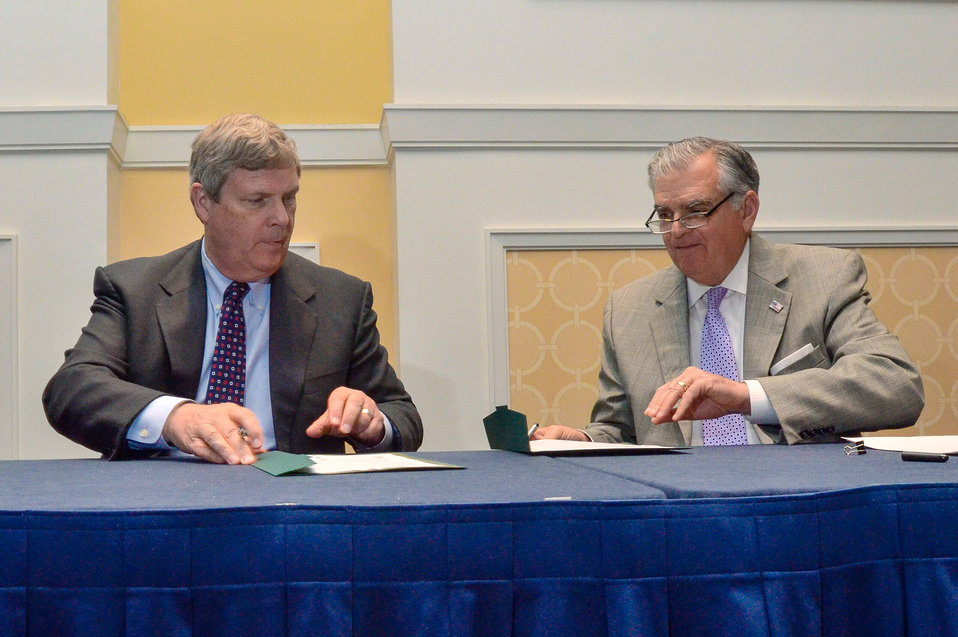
U.S. Department of Agriculture (USDA) Secretary Tom Vilsack (left), and Department of Transportation (DOT) Secretary Ray LaHood sign the Memorandum of Understanding (MOU) 'FARM to FLY 2.0 -- Working Together Resolution' extending for five years its agreement to work with DOT Federal Aviation Administration (FAA) and other partners to help develop a viable biofuel for the aviation industry. The MOU was signed at the Advanced Biofuels Leadership Conference at Gaylord National Harbor in Maryland, Monday, April 15, 2013.